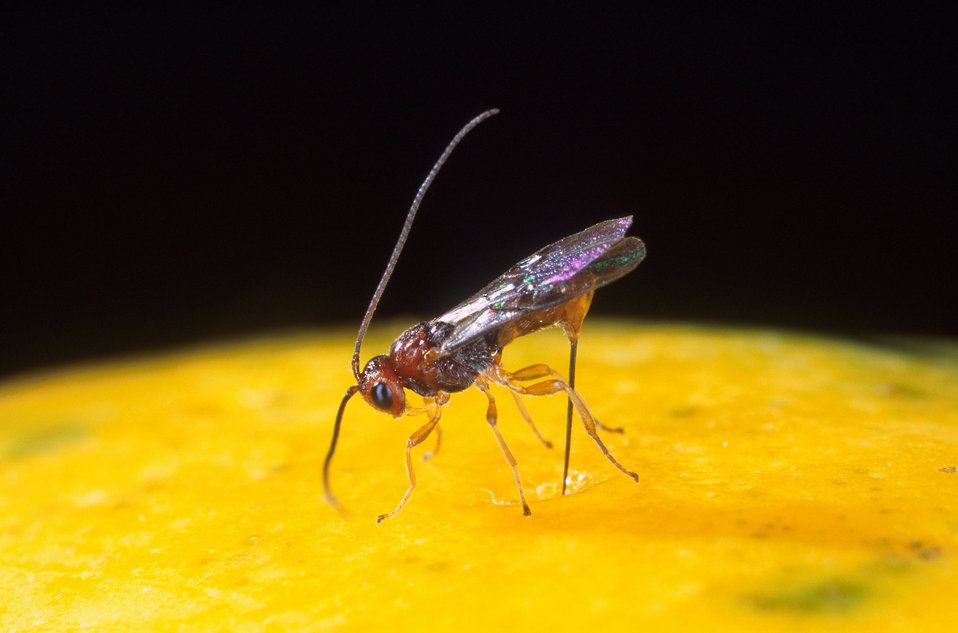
A parasitic wasp (Fopius arisanus) attacks an Oriental fruit fly on Dec. 27, 2011.